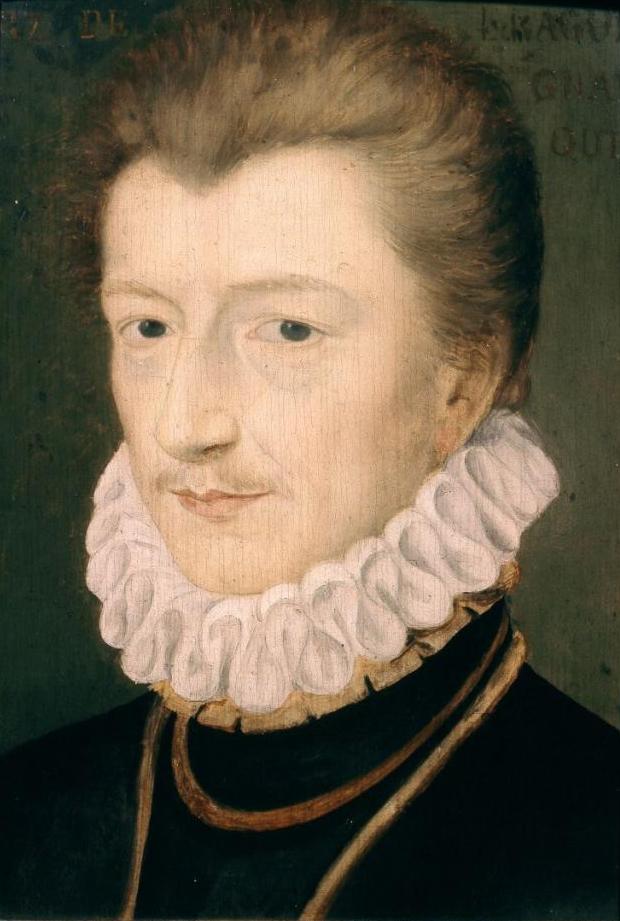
Clouet Henri de Guise